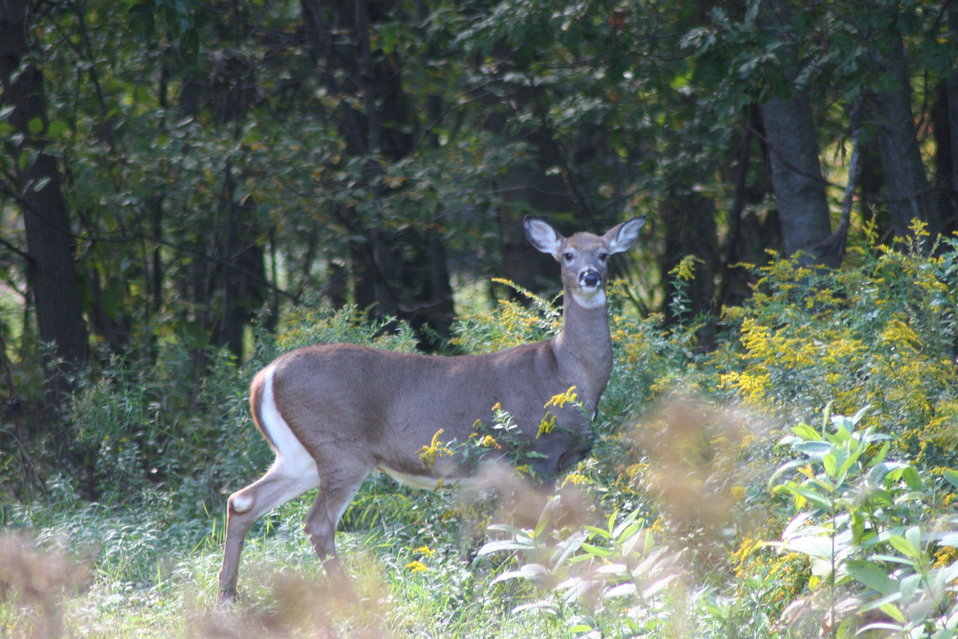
White-tailed deer at Great Bay NWR

White-tailed deer at Great Bay National Wildlife Refuge, Newington, NH.